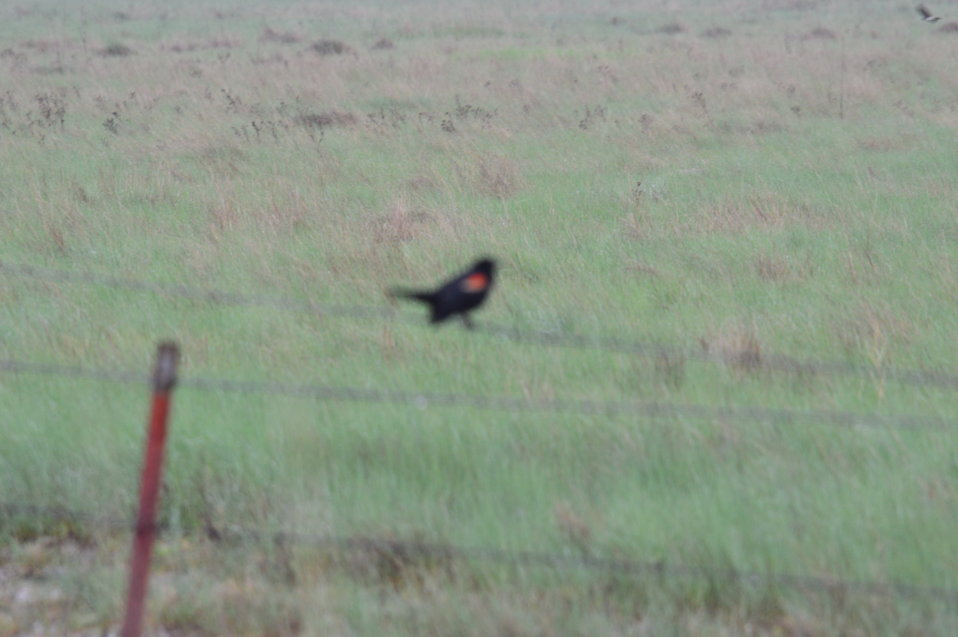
Bird sitting on the fence

Scenery and wildlife at Lost Lake National Wildlife Refuge in North Dakota.